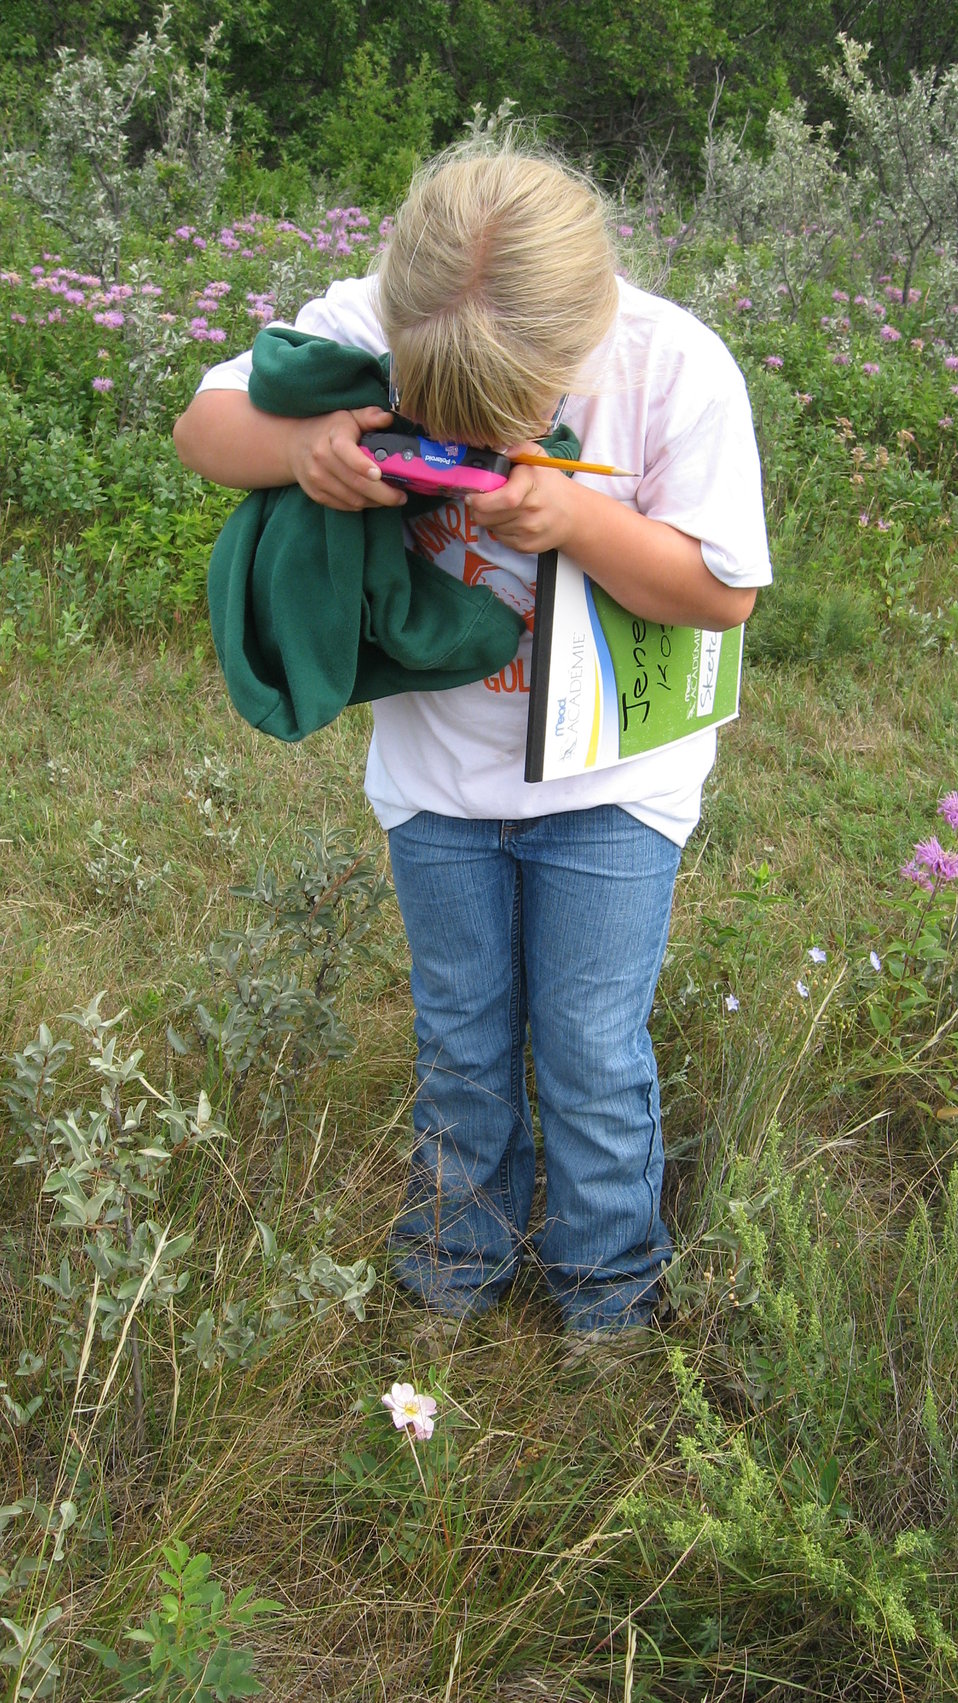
Photographing Flowers

Kenmare Summer Reading program participant photographing some of the beautiful native flowers found on Munch's Coulee Hiking Trail on Des Lacs National Wildlife Refuge in North Dakota.